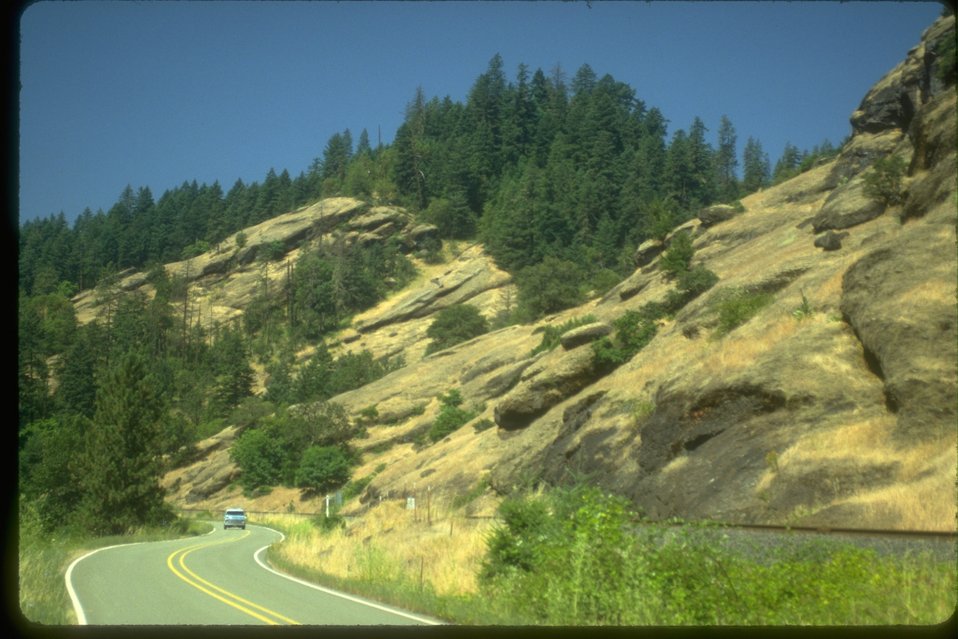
Cow Creek Back Country Byway at Betty Creek (Resource Nature Area--RNA).